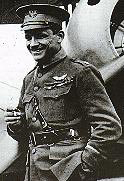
Major Raoul G. Lufbery

EARLY YEARS -- Raoul Gervais Lufbery, the third highest scoring American ace for World War I, was the first American to reach ace status. He was member of the famed Lafayette Escadrille before transferring to the U.S. Air Service following the nation's entry into the war. He had 17 confirmed victories with the French.